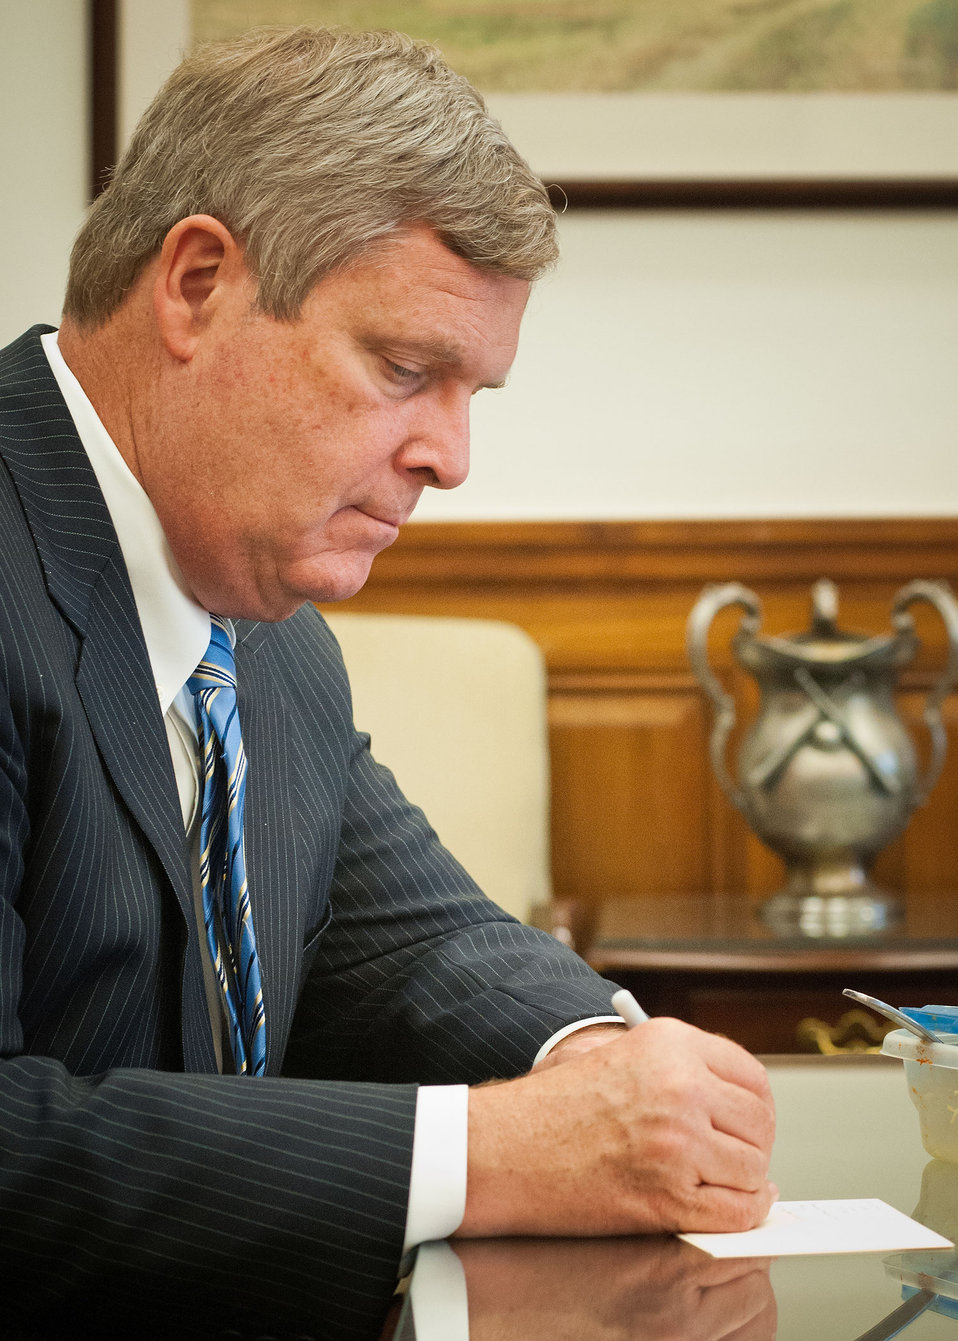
Agriculture Secretary Tom Vilsack takes notes at a lunch with U.S.Department of Agriculture (USDA) employees to discuss the roles they play within the Department at a Brown Bag Lunch in Washington, D.C. on Wednesday, Sept. 26, 2012. Secretary Vilsack holds the occasional Brown Bag Lunches to gain information and knowledge to assist in the administration of the affairs and programs of the Department, and to thank the employees for their diligent work to the Department and as public servants.